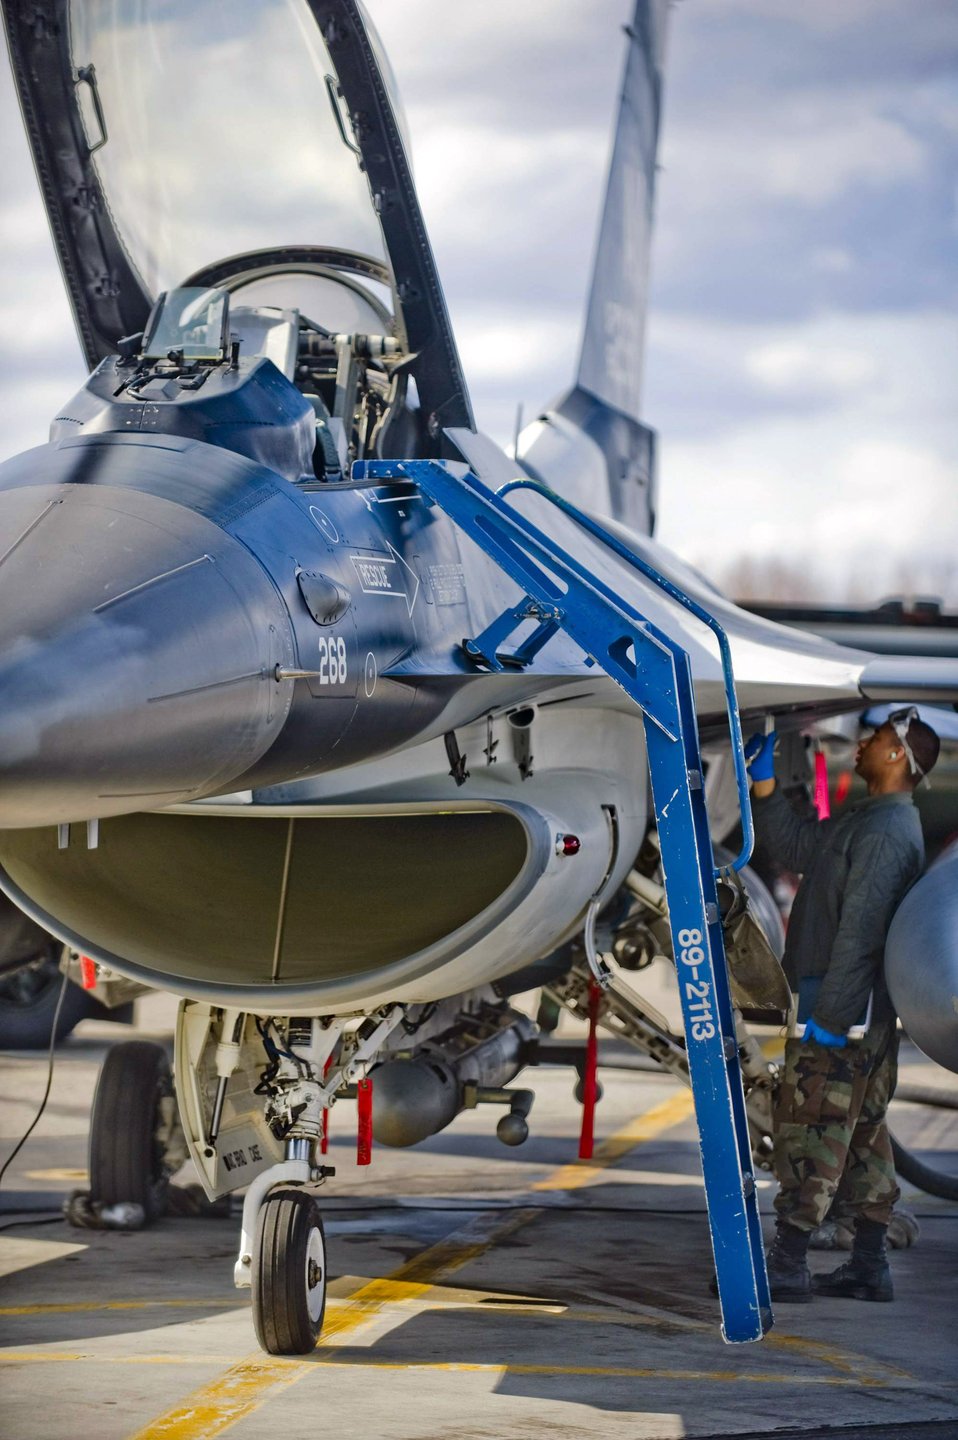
'Aggressive' training helps pilots outmaneuver enemy

Airman 1st Class Kyle Hughes inspects an F-16 Fighting Falcom May 8 at Eielson Air Force Base, Alaska. The 18th Aggressor Squadron pilots are simulating enemy aircraft during Northern Edge, a joint-training exercise held yearly. Airman Hughes is a 354th Aircraft Maintenance Squadron crew chief. The exercise gives pilots a chance to train during a realistic representation of possible threats.